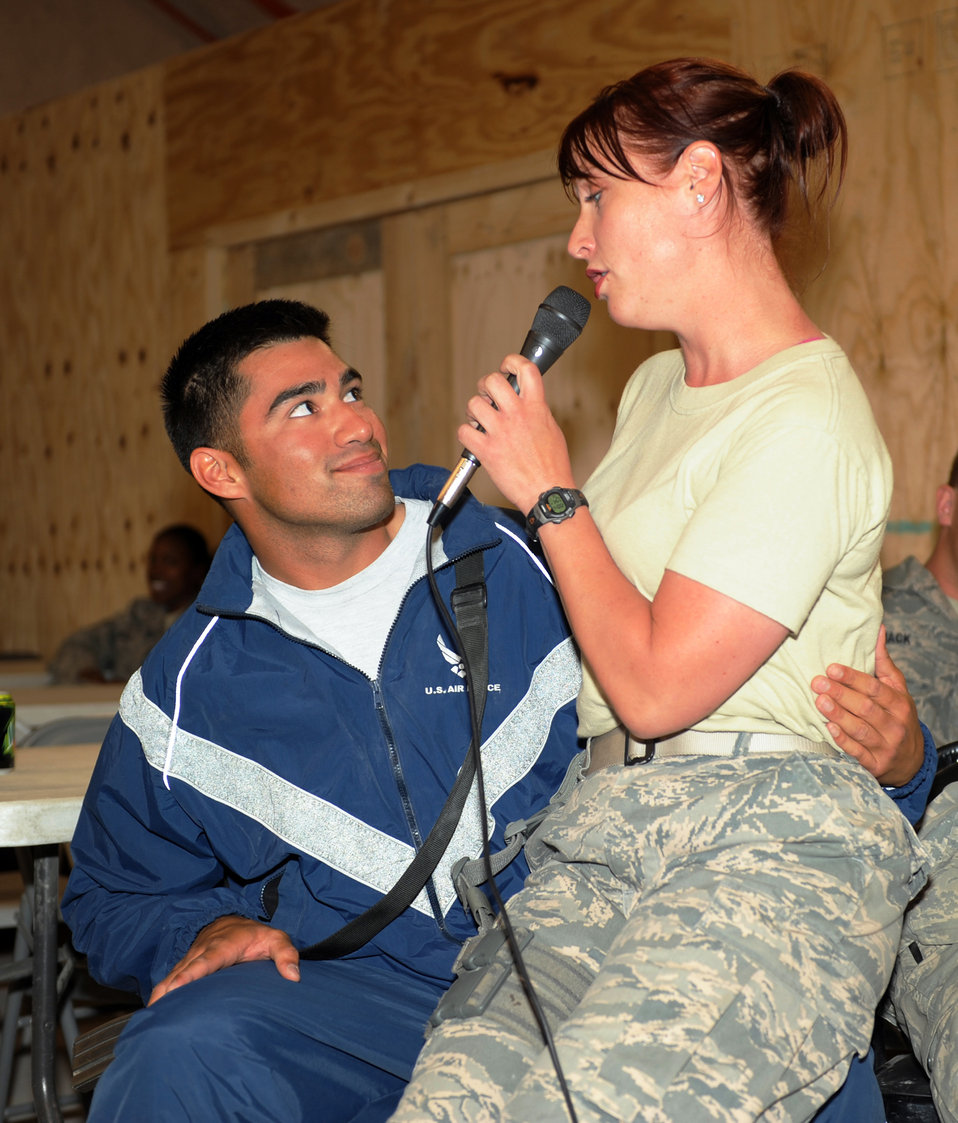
Bandr rocks Bagram servicemembers

Airman 1st Class Jill Diem serenades Senior Airman Luis Murillo during a concert April 17, 2010, at Bagram Airfield, Afghanistan. Airman Diem is a vocalist with the U.S. Air Forces Central Band Reserve Generation and Airman Murillo is assigned to the 455th Expeditionary Civil Engineers Squadron Force Protection Flight.